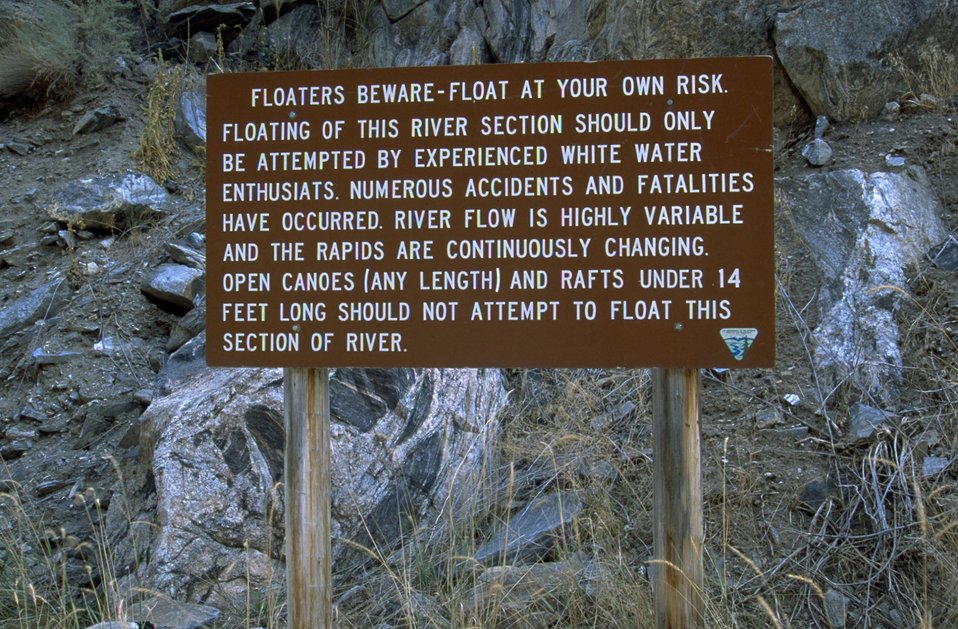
Floaters Beware sign at the Bear Trap